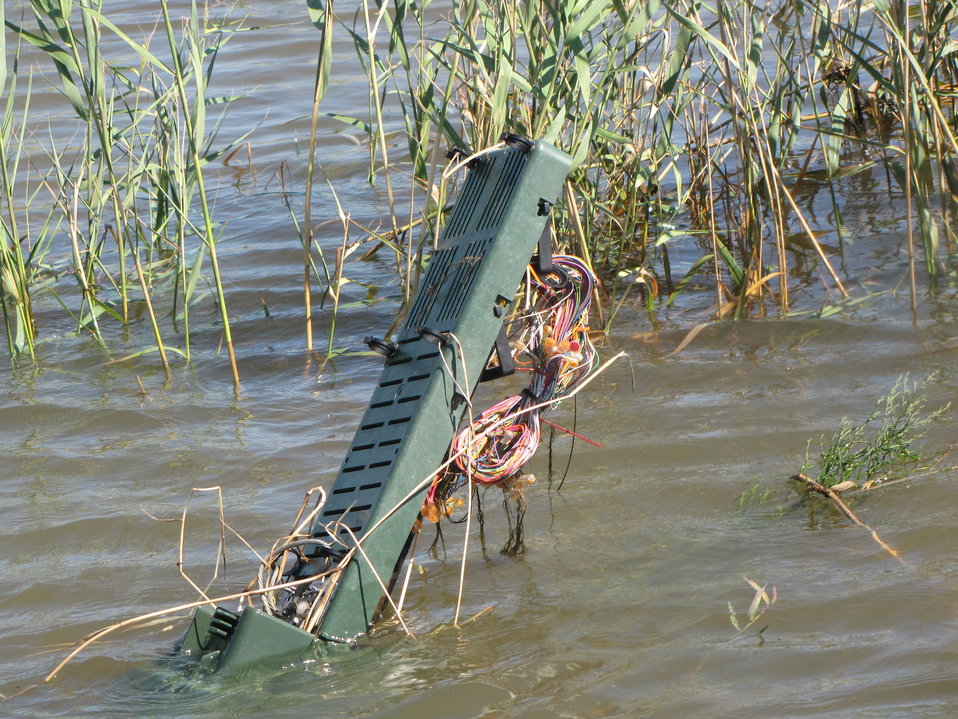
Flood damage at Prime Hook

Flood damage from Hurricane Irene at Prime Hook National Wildlife Refuge in Delaware.